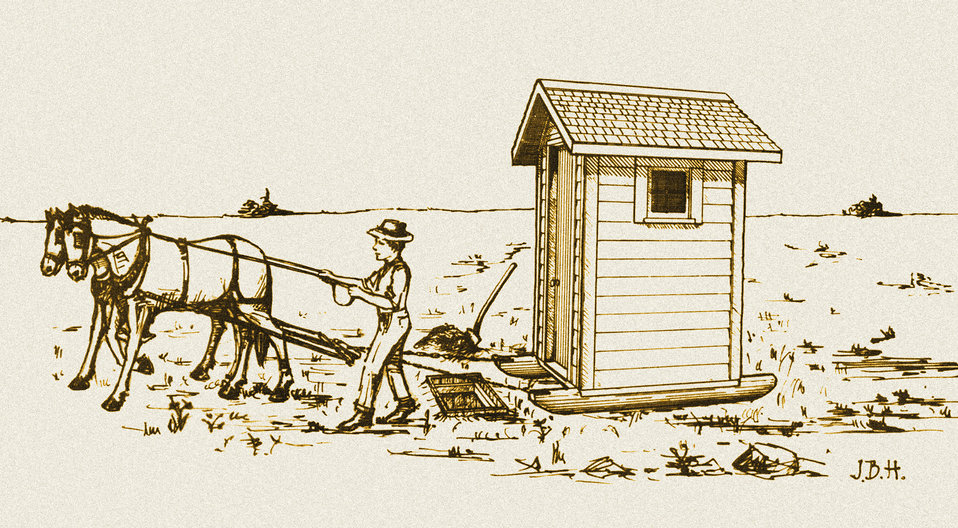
This historic diagram, which had been digitally enhanced and colorized, depicted the correct method of moving a sanitary type of privy atop a new pit in a situation that was typical on a Minnesota farm.